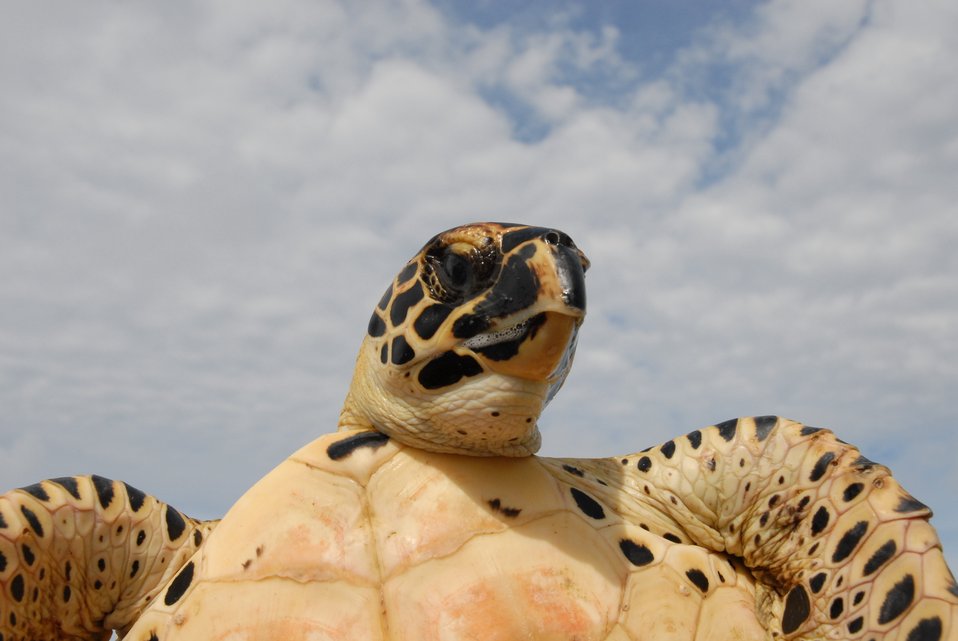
Sea turtle showing facial markings and underbody.